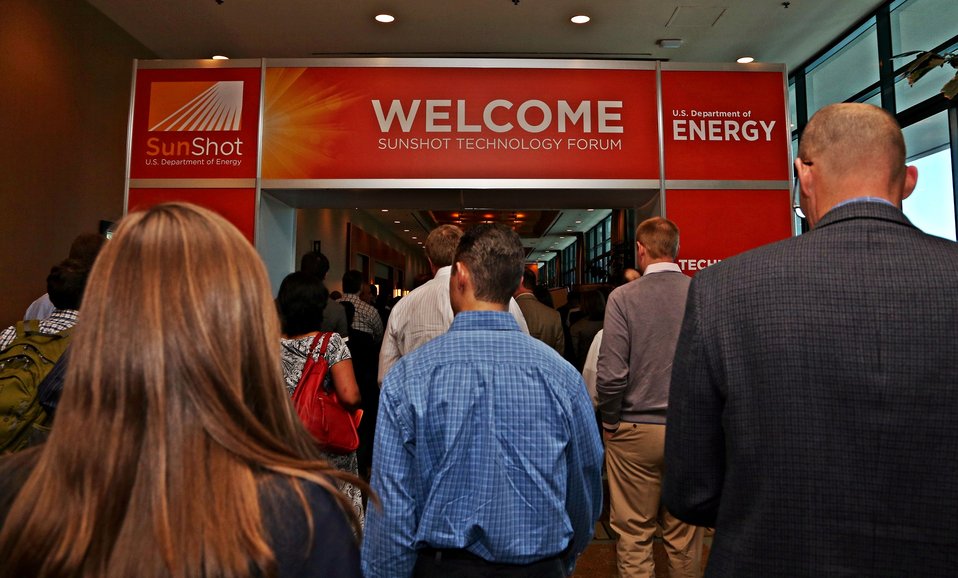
Tech Forum 1

Tech Forum Entrance